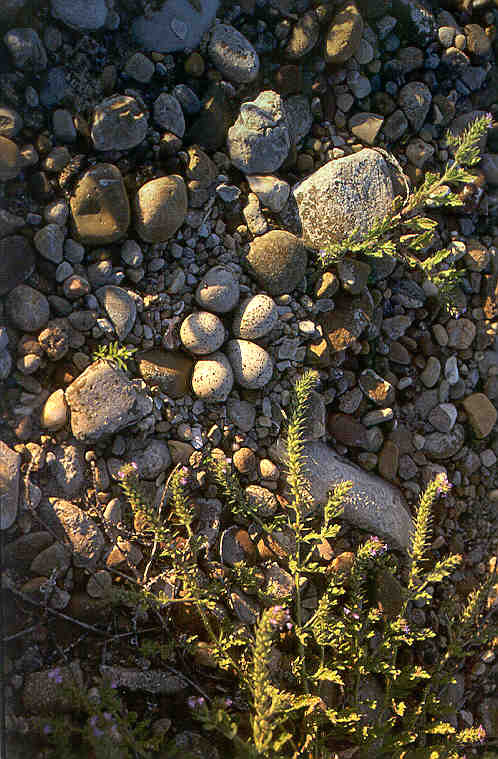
Piping plover nest, Bowdoin WMD